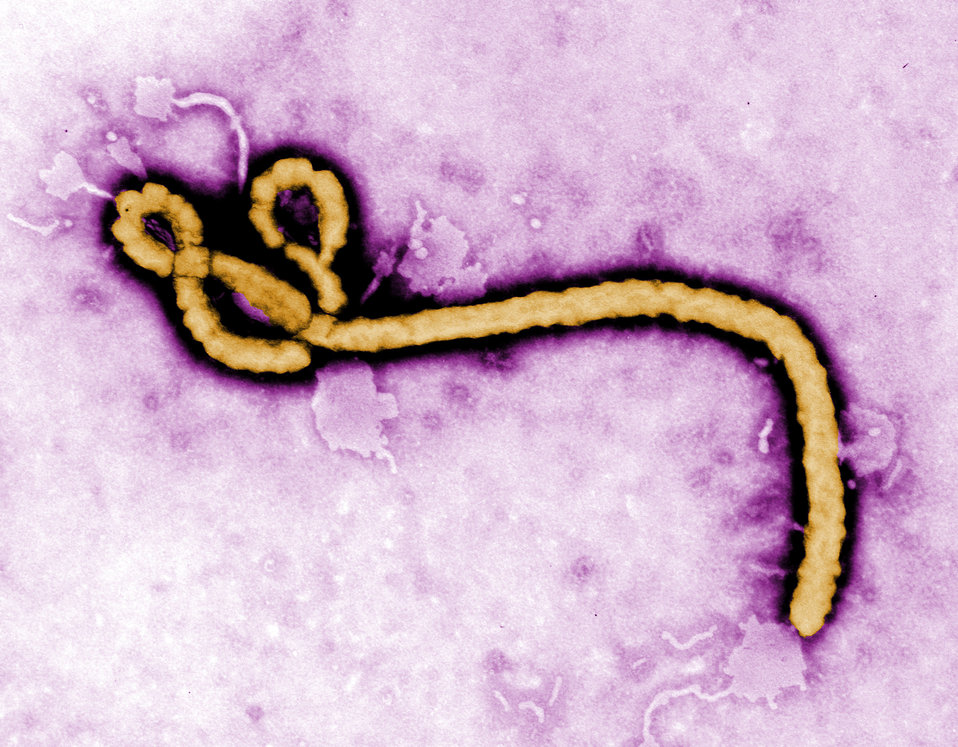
Created by CDC microbiologist Frederick A. Murphy, this colorized transmission electron micrograph (TEM) revealed some of the ultrastructural morphology displayed by an Ebola virus virion. See PHIL 1181 for a black and white version of this image.